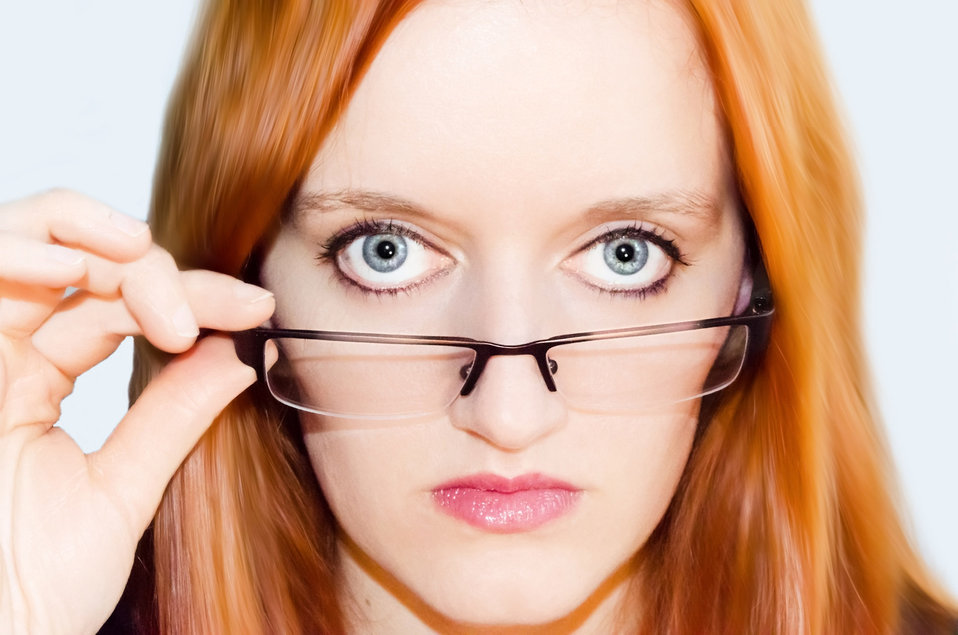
Woman and glasses.